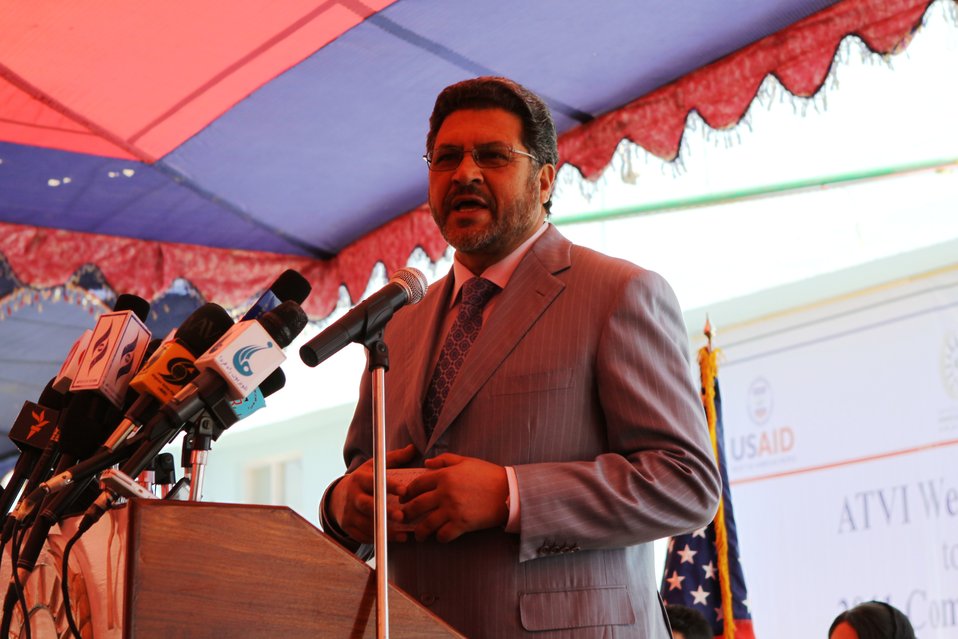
100522 ATVI Graduation 082